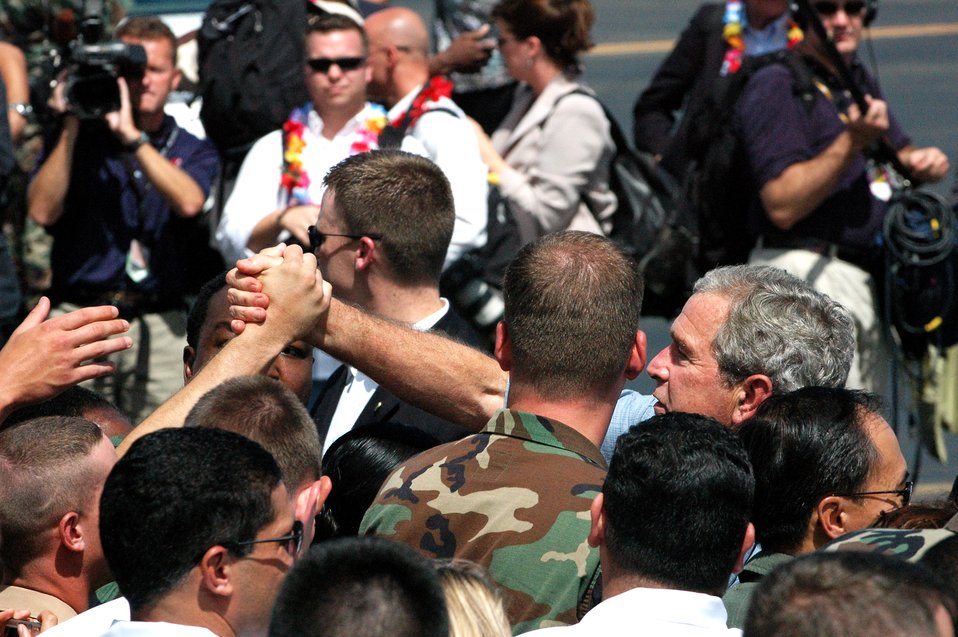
President visits Hickam

President George W. Bush exits Air Force One at Hickam AFB during his visit to Hawaii, Sept. 8. The president met with 33 wounded servicemembers and their families and presented Caroline Tom with a volunteer service pin for 15 years of donating her time.